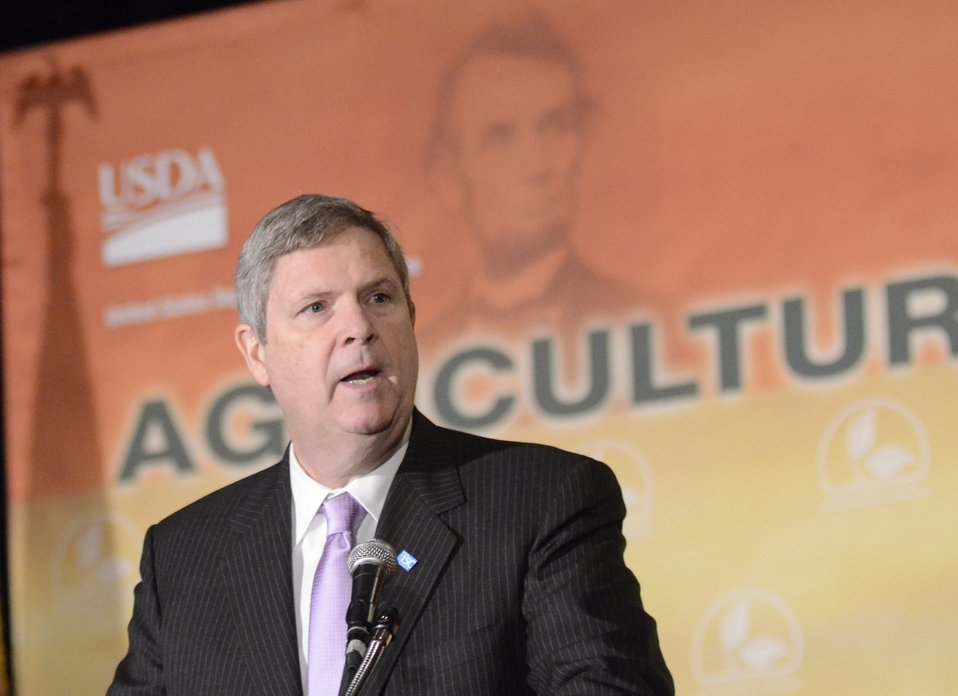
Agriculture Secretary Tom Vilsack makes remarks at the 2012 Agricultural Outlook Forum, “Moving Agriculture Forward” in Arlington, VA., on Thursday, February 23, 2012.